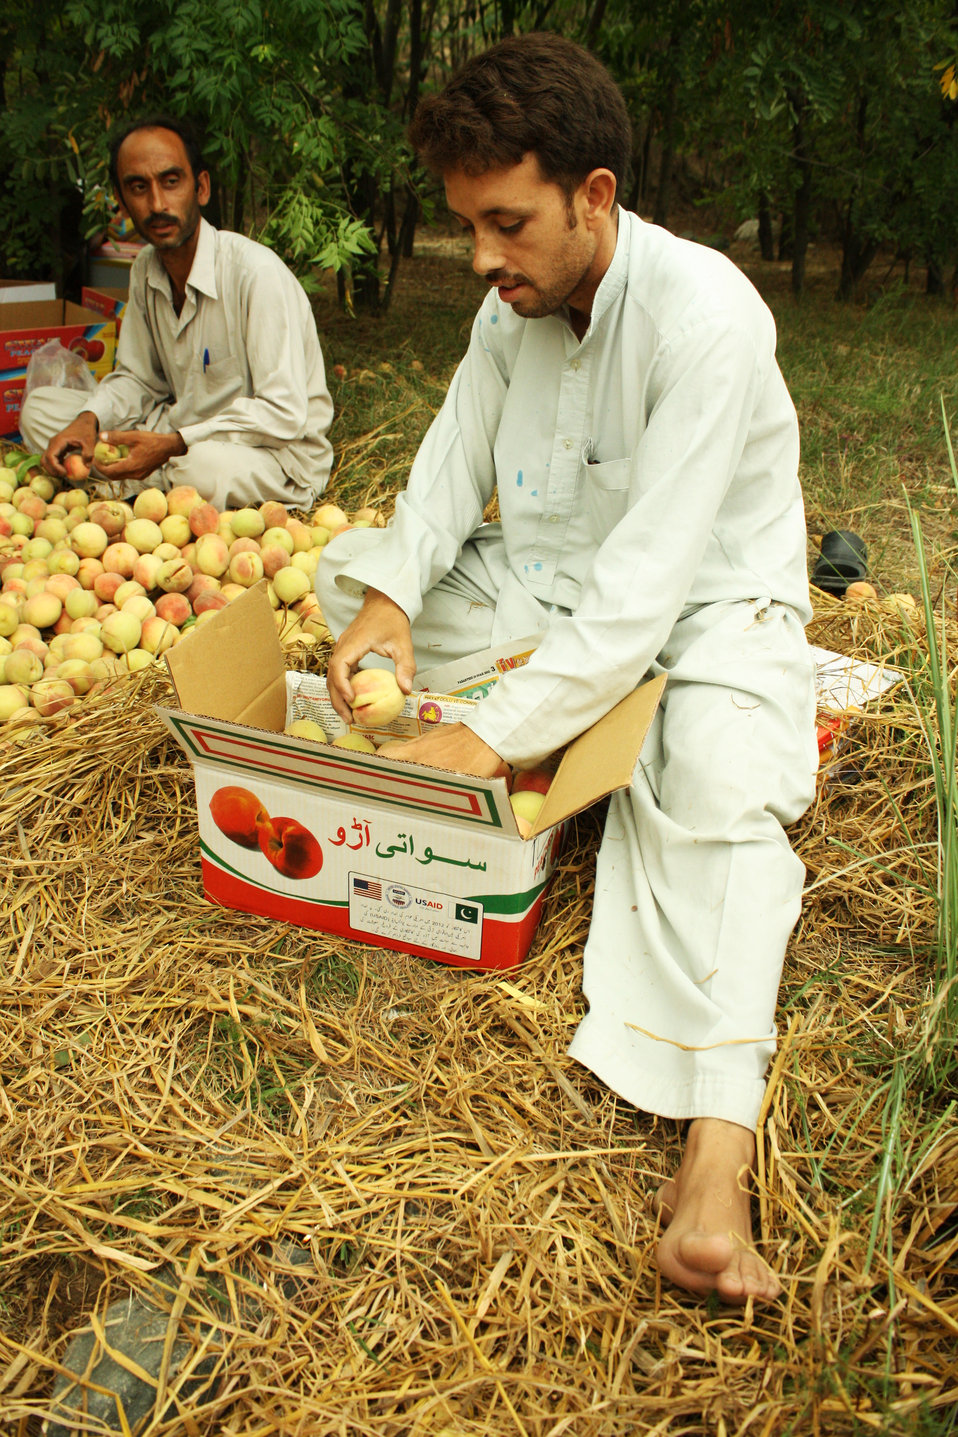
2. USAID successfully trained 449 local peach farmers in Swat under a $490,000 revitalization program that aims to develop 449 farmers from the region to access greater revenues